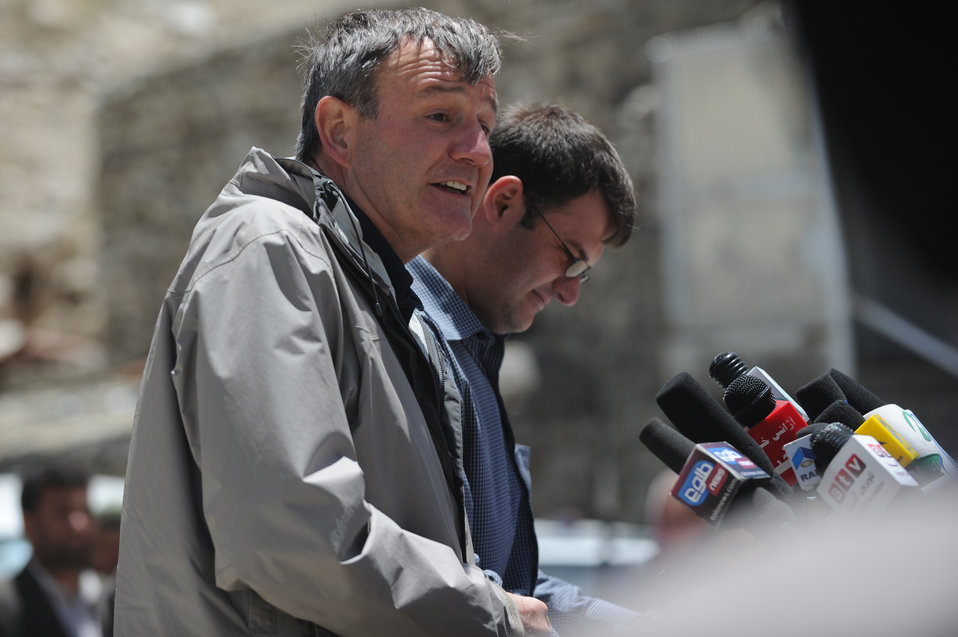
U.S. Ambassador Karl W. Eikenberry makes remarks during a ceremony to mark the beginning of renovations at the Salang Tunnel on the border of Parwan and Baghlan Provinces, Afghanistan, on Wednesday, June 15, 2011. (S.K.Vemmer/Department of State)